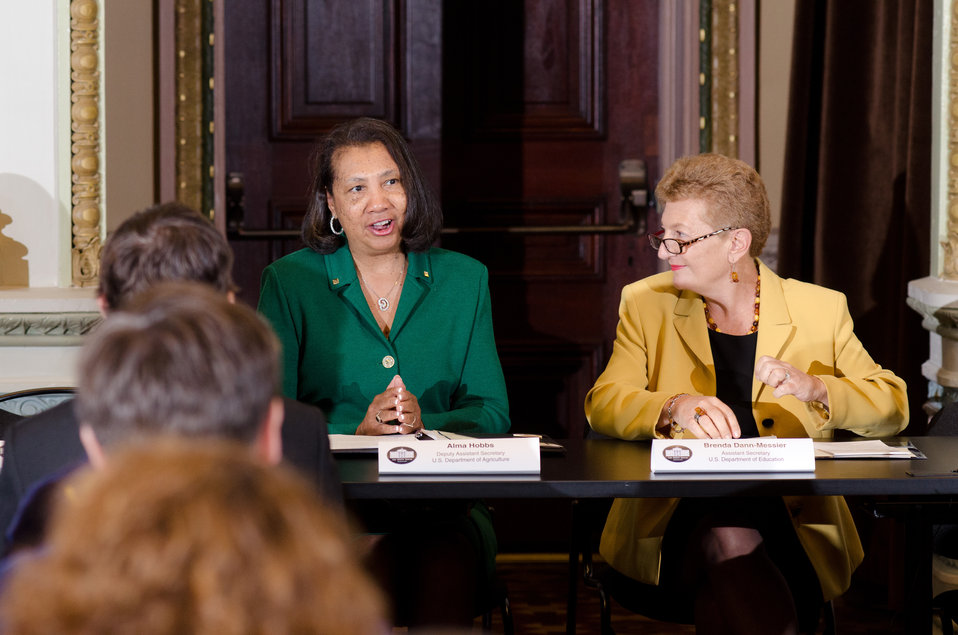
Agriculture Deputy Assistant Secretary Alma Hobbs and Education Assistant Secretary for Vocational and Adult Education Brenda Dann-Messier moderate the Educators/Mentors Champions of Change Panel at the Champions of Change Recognition event in the Indian Treaty Room at he Executive Office Building in Washington, D.C. on Tuesday, Oct. 9, 2012. The Champions of Change program was created to honor ordinary Americans doing great work in their communities. Each week, a different sector is highlighted and groups of Champions, ranging from educators, entrepreneurs and community leaders, are recognized for the work they are doing to serve and strengthen their communities.